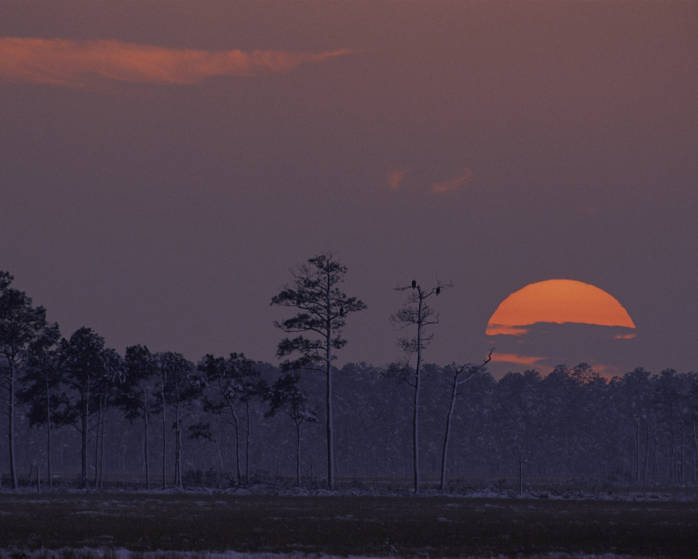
Blackwater National Wildlife Refuge